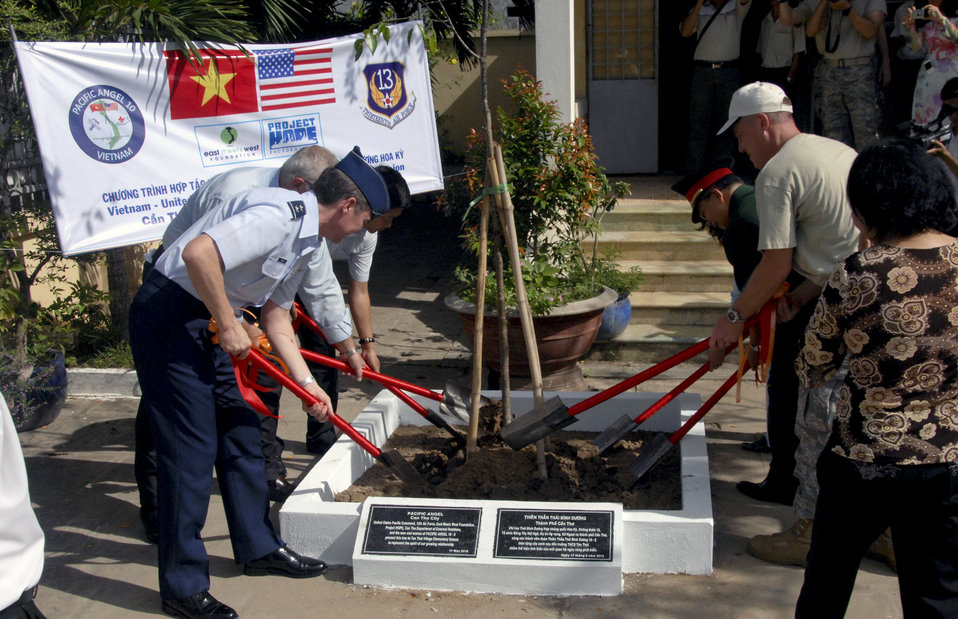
Operation Pacific Angel concludes

Maj. Gen. Jan-Marc Jouas (left), Lt. Col. Blair English and other senior members from the United States and Vietnam, plant a tree at the village elementary school, where humanitarian medical care was provided as part of Pacific Angel 2010 May 17, 2010, in Vietnam. General Jouas is the U.S. Pacific Air Forces director of Operations, Plans, Requirements and Programs and Colonel English is the mission commander for Pacific Angel 2010.